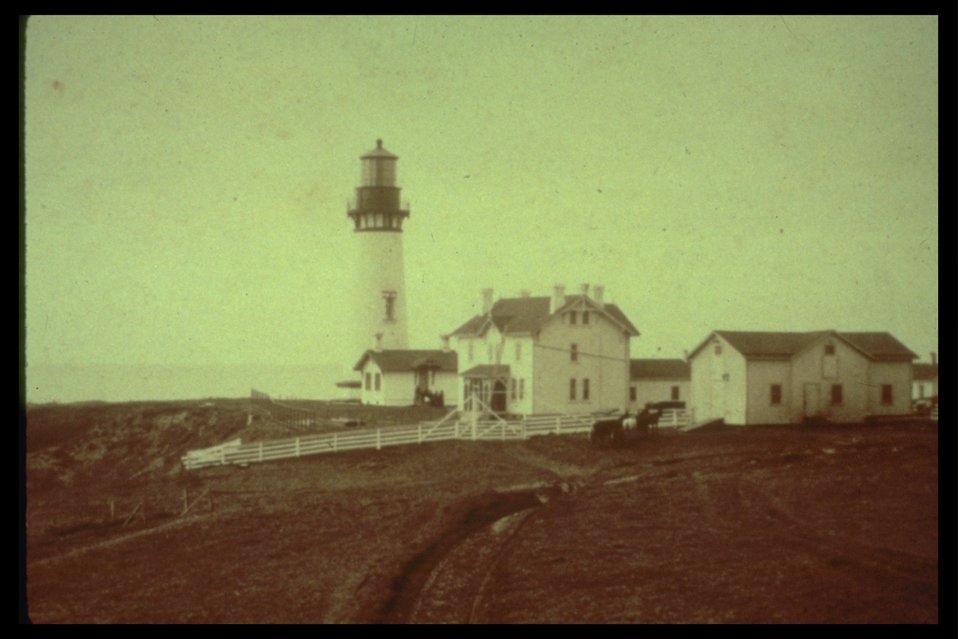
Early Yaquina Head Lighthouse, keeper's house, barn, and fences.